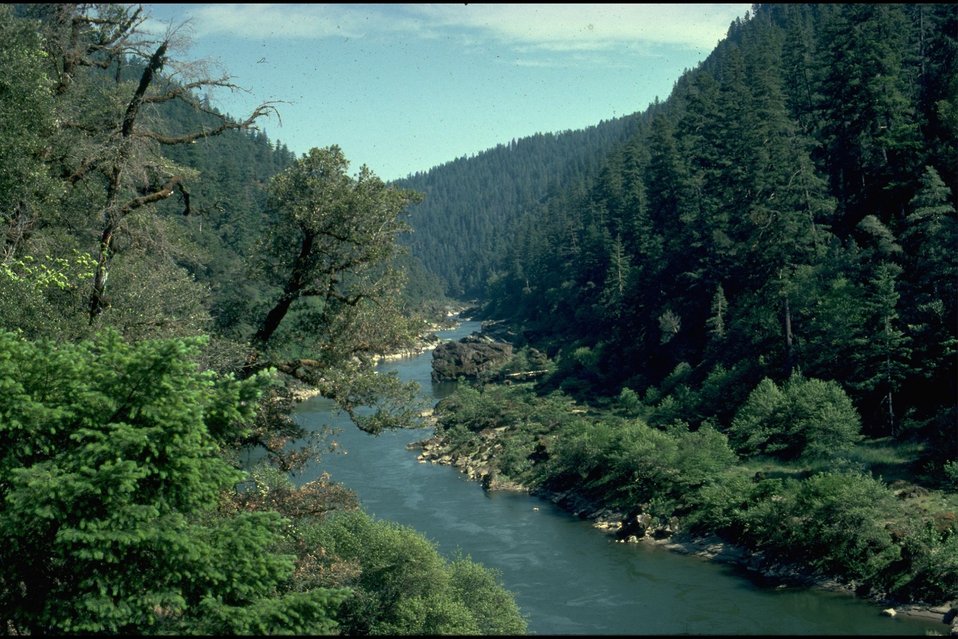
Rogue River - Scenic shot.